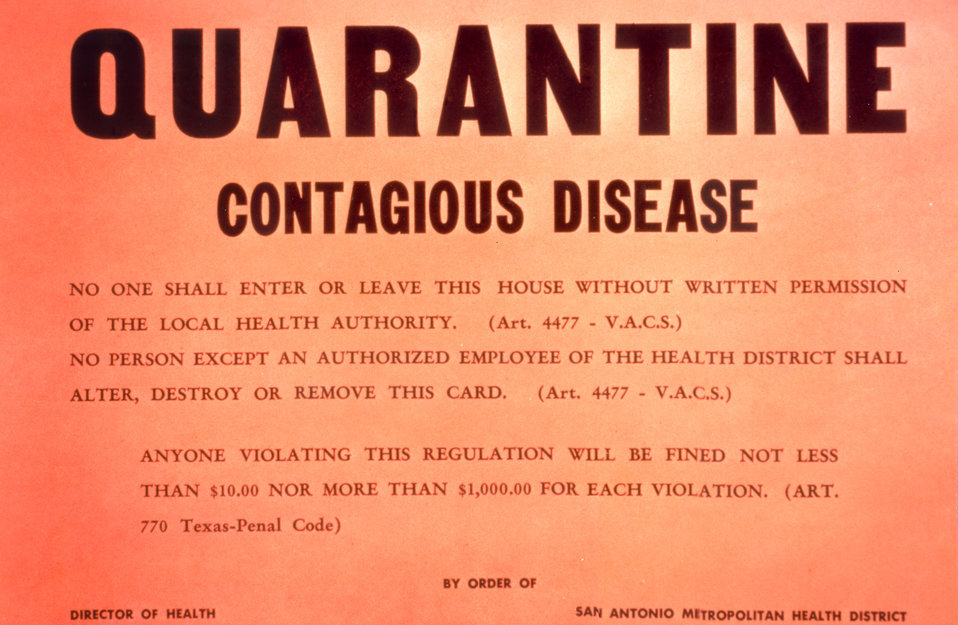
Quarantine Sign